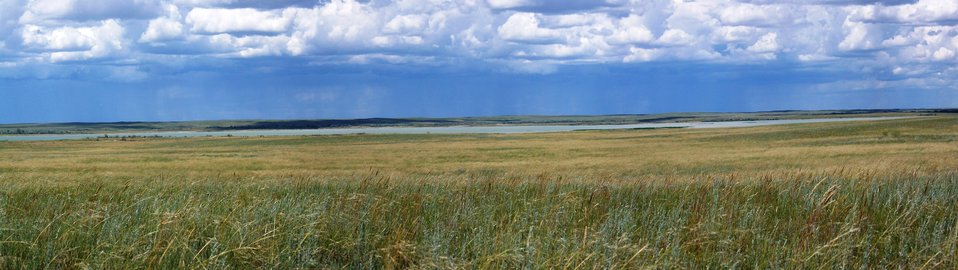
Prairie overlooking Lake Bowdoin

Native prairie and Lake Bowdoin in the background on Bowdoin NWR